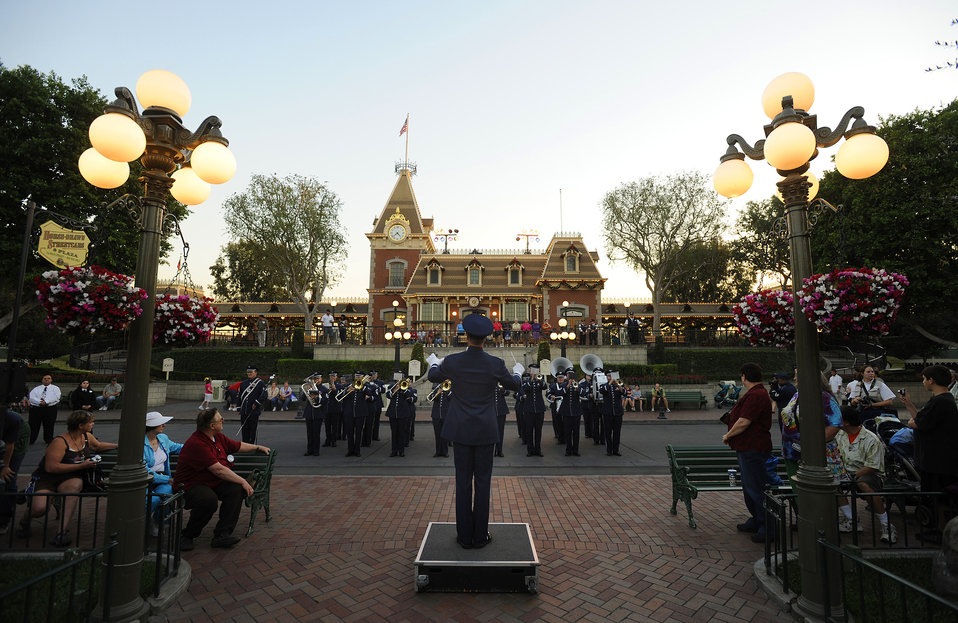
Air Force Week-Los Angeles

Marching band members of the U.S. Air Force Band of the Golden West perform the